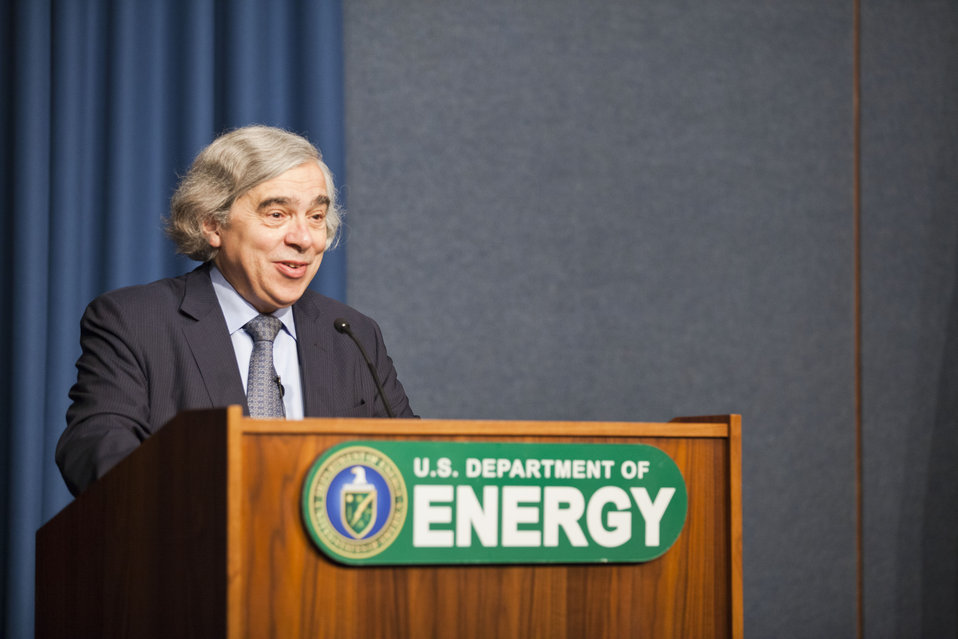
DOE Town Hall

On May 22, 2013, newly sworn-in Energy Secretary Dr. Ernest Moniz opened up a town hall forum. DOE employees were invited to attend, and submit questions to staff.